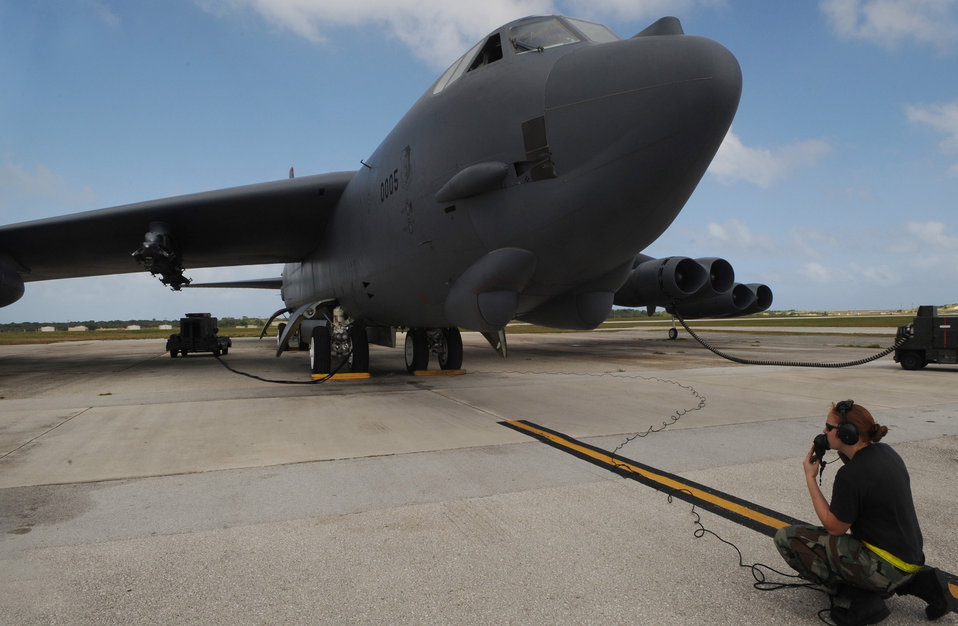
Airman 1st Class Caroline Kraus performs preflight checks during a B-52 Stratofortress launch Dec. 30 at Andersen Air Force Base, Guam. Airman Kraus is assigned to the 36th Expeditionary Aircraft Maintenance Squadron at Andersen and is deployed from Minot AFB, N.D. The bomber's participation in constant training helps emphasize the U.S. bomber presence, demonstrating U.S. commitment to the Pacific region.